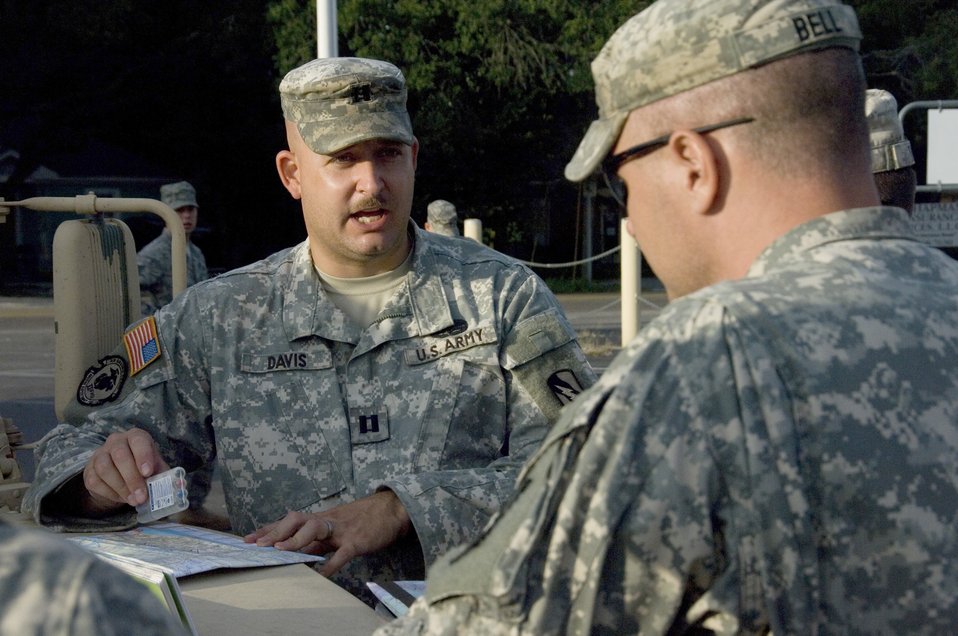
Army Guardsmen begin evacuation mission

Army National Guard Capt. Sean Davis briefs his team members prior to conducting a mission to notify FEMA trailer residents of mandatory evacuation orders in Gulfport, Miss., Aug. 31. All FEMA trailer residents in Gulfport are under a mandatory evacuation order in anticipation of Hurricane Gustav making landfall. Army guardsman Captain Davis is from A Troop, 1-98 Cavalry Regiment, Pontotoc, Miss.